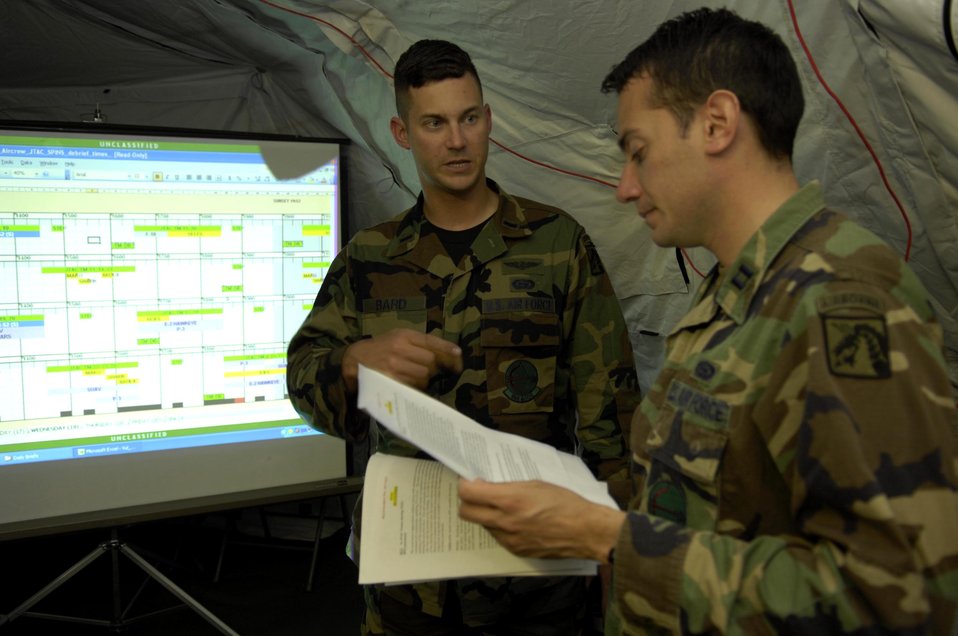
Air Support Ops keep control at Atlantic Strike V

First Lt. Brandon Bard speaks with Capt. Eric Nunez April 18 about ways to increase mission efficiency during Atlantic Strike V. Atlantic Strike is a semi-annual joint forces training event involving Joint Terminal Attack Controllers from the Air Force, Army and Marines. The event is held at Avon Park Air Ground training Complex in Avon Park, Fla.